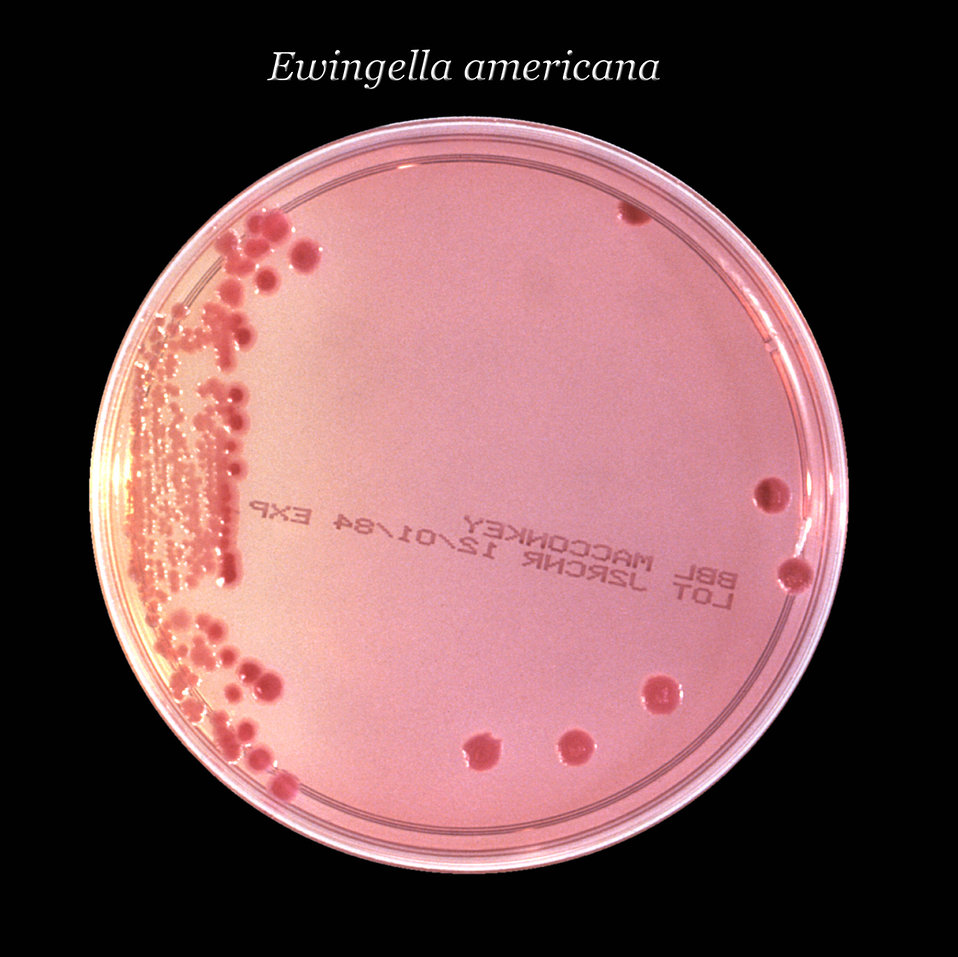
After 24 hours, this inoculated MacConkey agar culture plate cultivated colonial growth of Gram-negative, rod-shaped and facultatively anaerobic Ewingella americana bacteria.